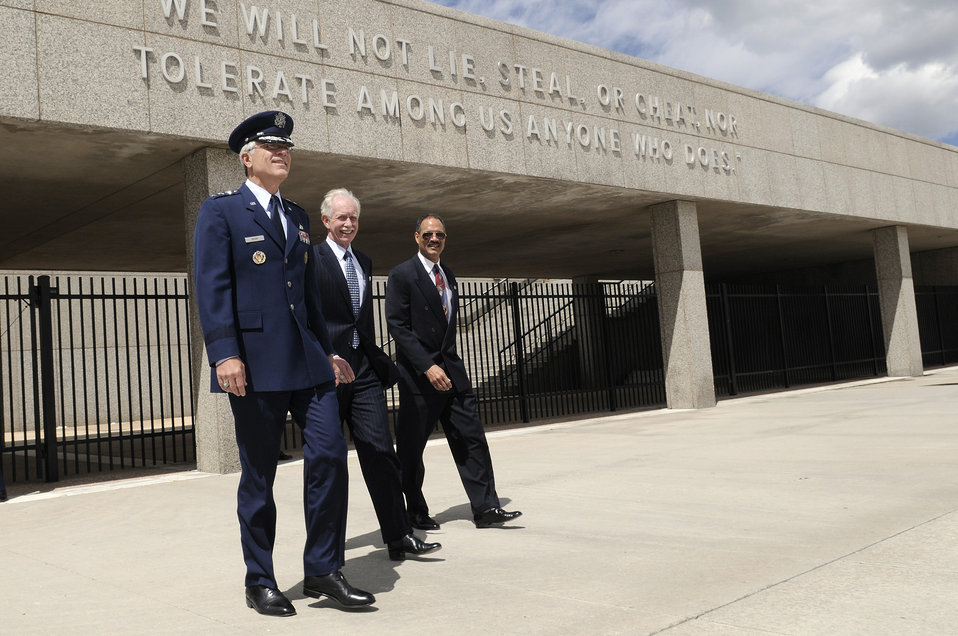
Hero of the Hudson visits alma mater

Air Force Academy Superintendent Lt. Gen. John F. Regni is accompanied onto the Academy Terrazzo by classmate Chesley